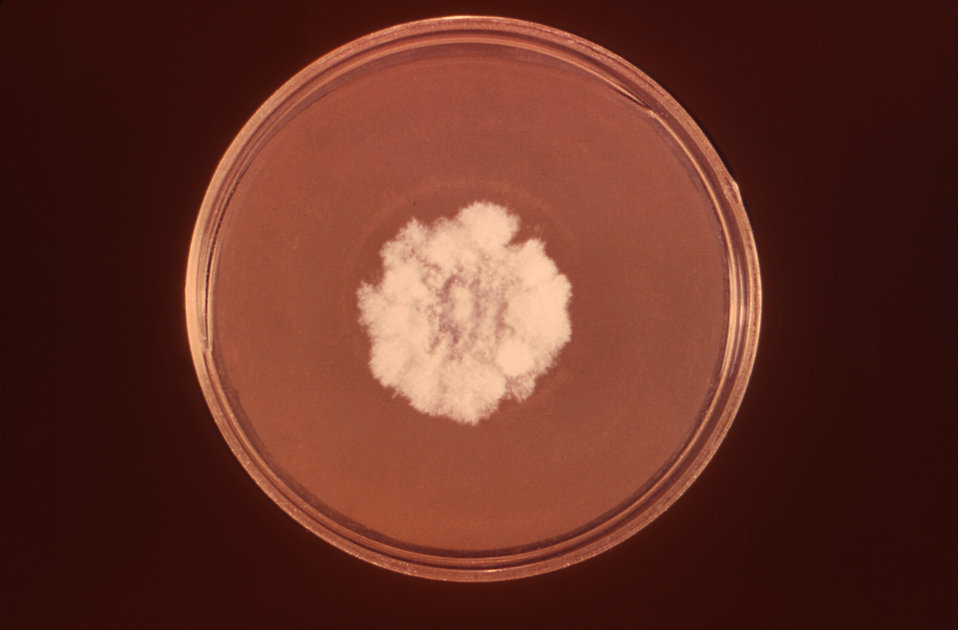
This image depicts a single older colony of fungal organisms from the genus Sepedonium, which had been grown on a medium of Sabouraud dextrose agar.